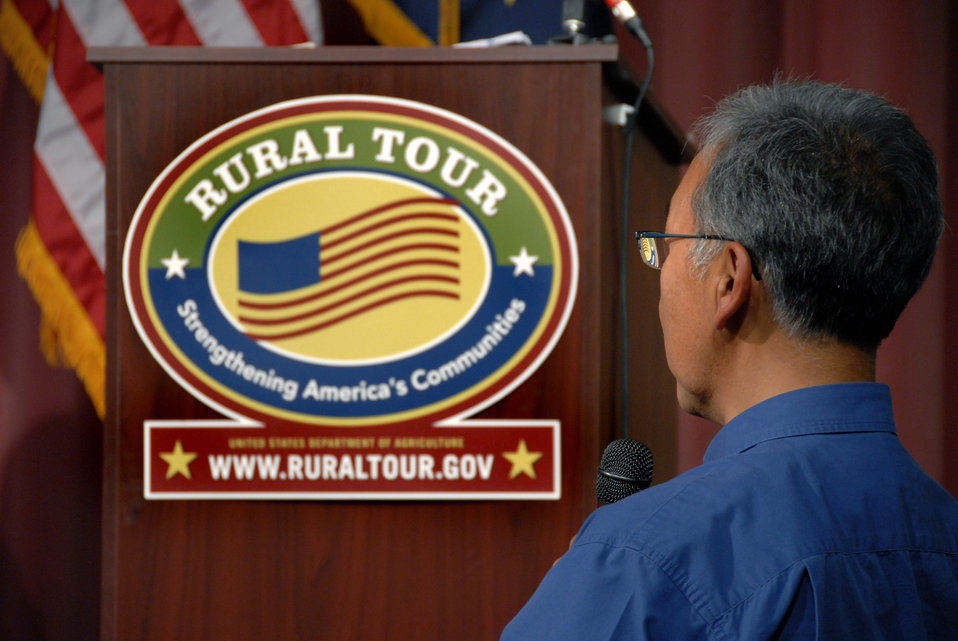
Rural Tour 0157

Rural Tour Alaska Aug 2009